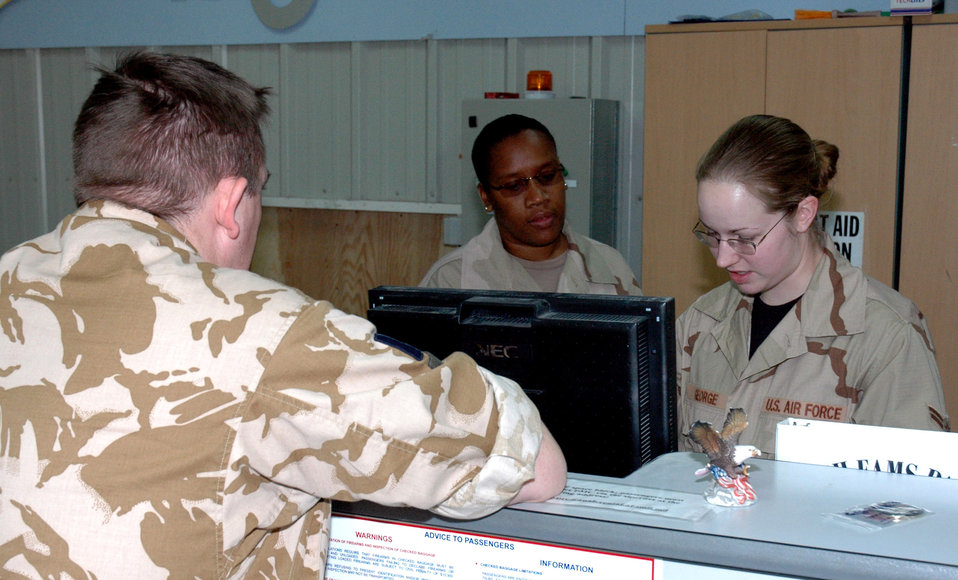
Aerial port hub keeps passengers, cargo rolling

Passenger service agents, Tech. Sgt. Juliet Diggs and Airman 1st Class Laura George process in a member of the British Royal Air Force for intratheater airlift. The Airmen are with the 8th Expeditionary Air Mobility Squadron. The squadron processed approximately 257,000 servicemembers, Coalition partners and federal contractors for travel in 2006.